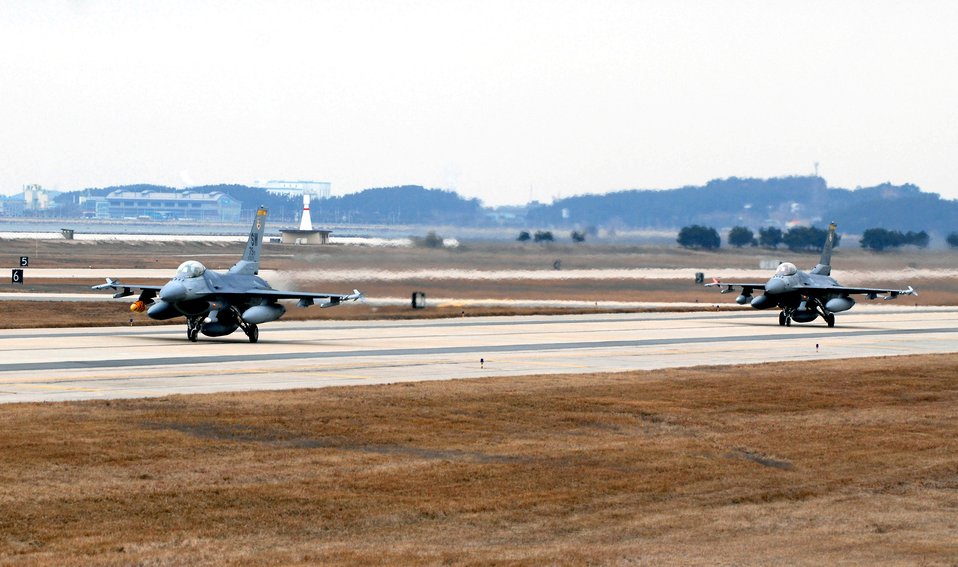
Falcon comes to nest in Kunsan

F-16 Fighting Falcons taxi on the runway Jan. 15 at Kunsan Air Base, South Korea. More than 300 Airmen and several aircraft from the 79th Fighter Squadron from Shaw Air Force Base, S.C., are in South Korea as the squadron's air and space expeditionary force deployment to help maintain peace and stability in the Pacific region.